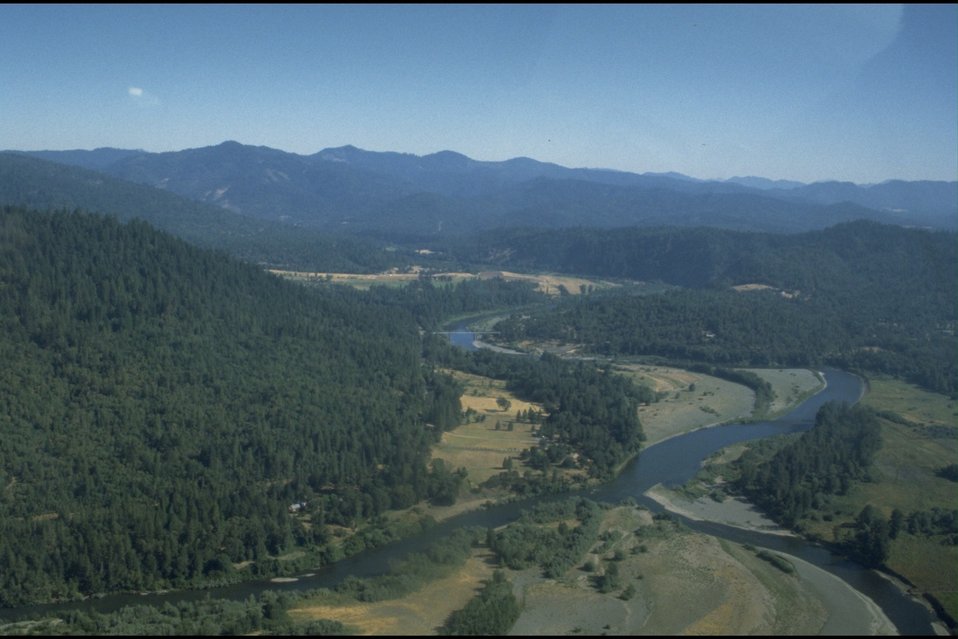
Rogue River - Brushy Chutes to Robertson Bridge, Hellgate Recreation Area, aerial photo.